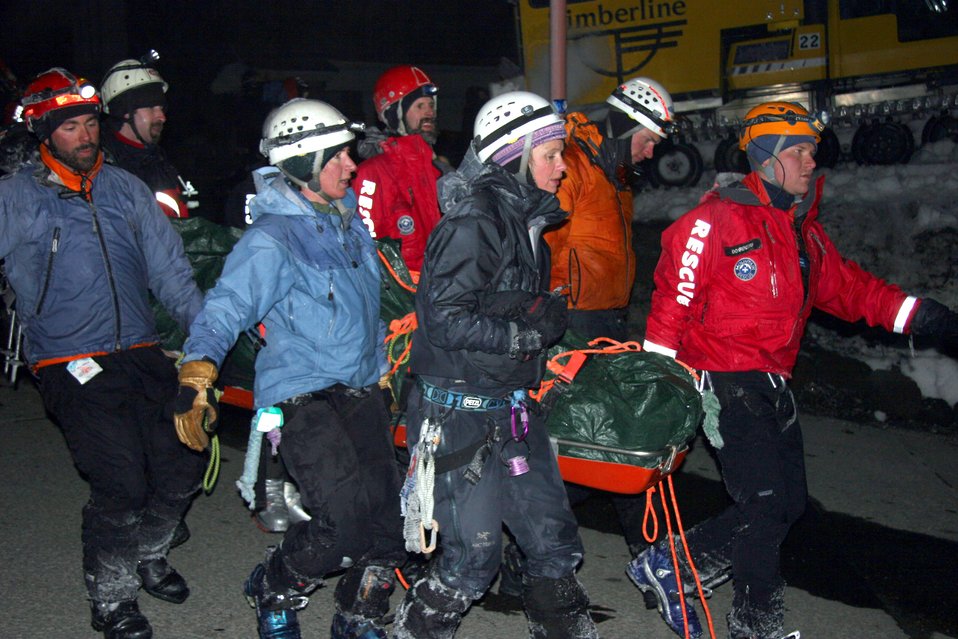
PJs help rescue skier off glacier

Pararescuemen from the Air Force Reserve Command's 304th Rescue Squadron, along with volunteers from local rescue organizations in Portland, Ore., worked for hours in freezing temperatures to rescue a skiing accident victim on Mount Hood.